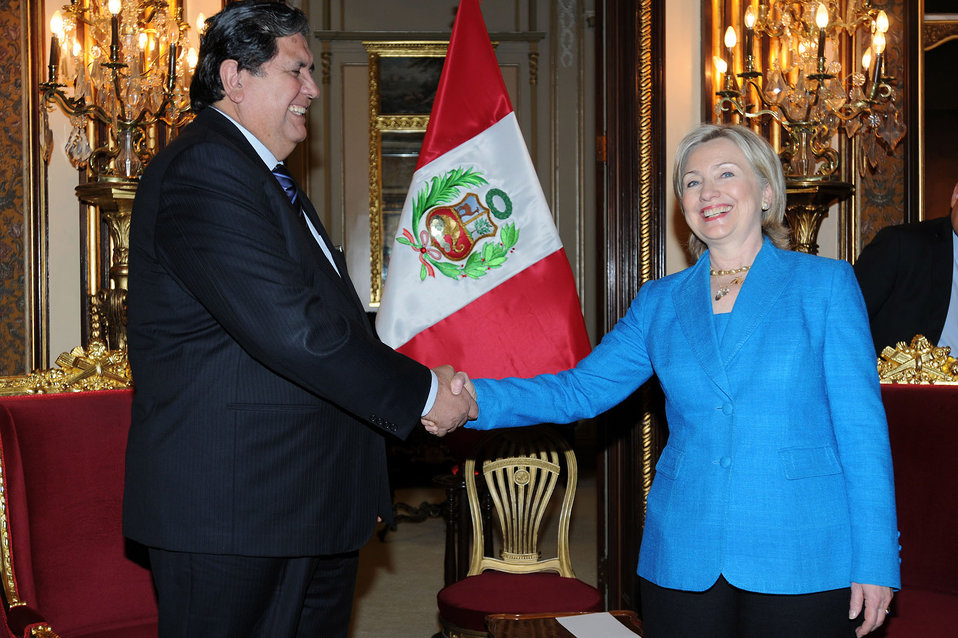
Secretary Clinton Meets With Peruvian President

U.S. Secretary of State Hillary Rodham Clinton meets with Peruvian President Alan Garcia at the Government Palace in Lima, Peru June 7, 2010.